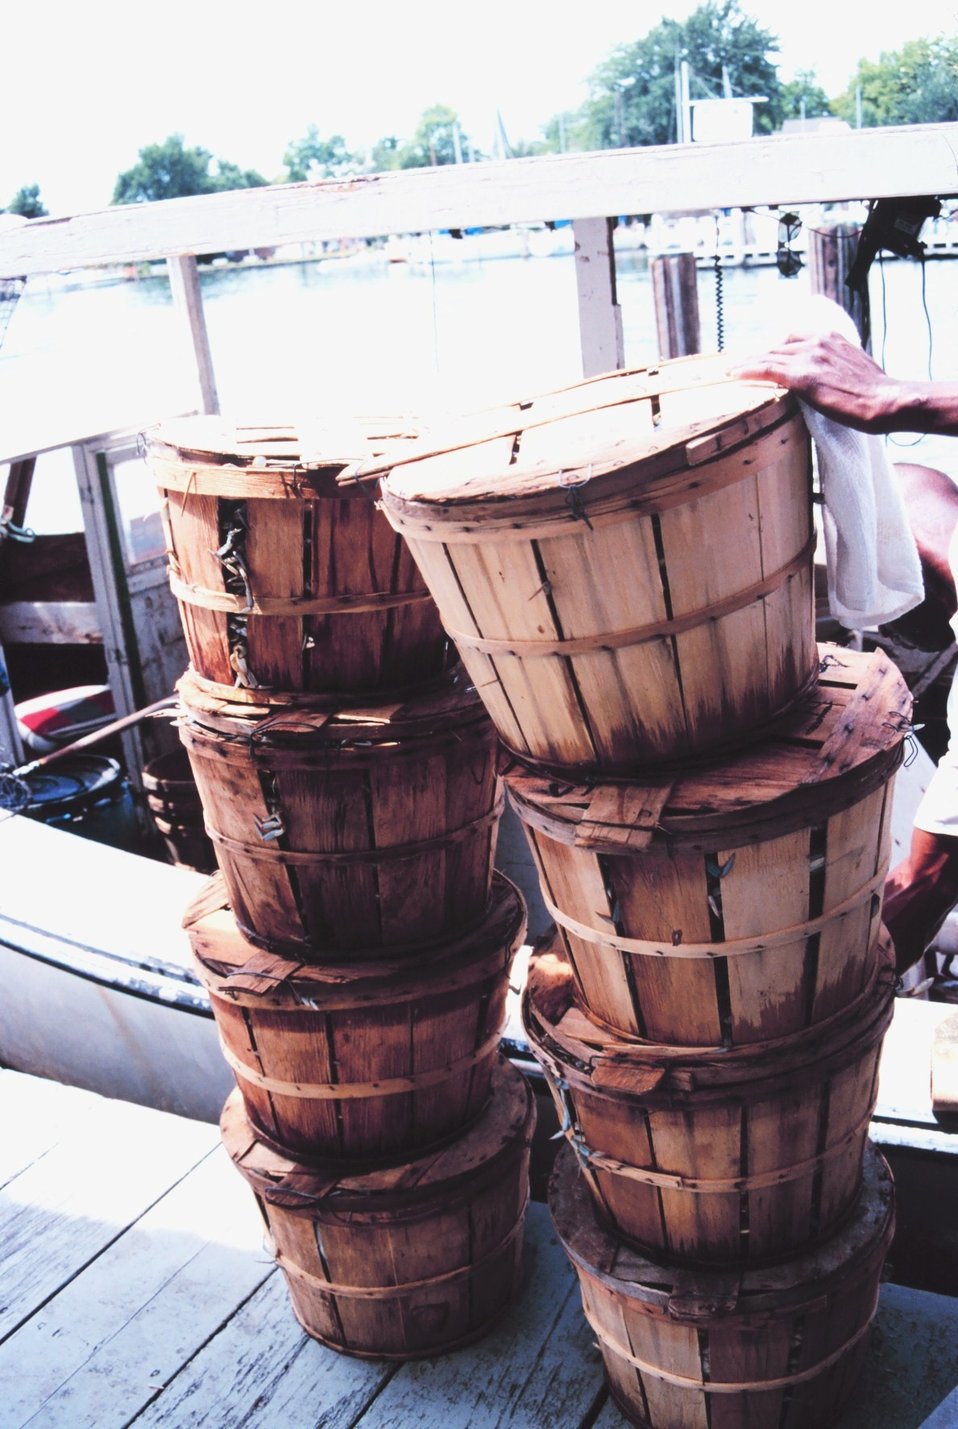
Bushels of blue crabs, bounty of the bay.